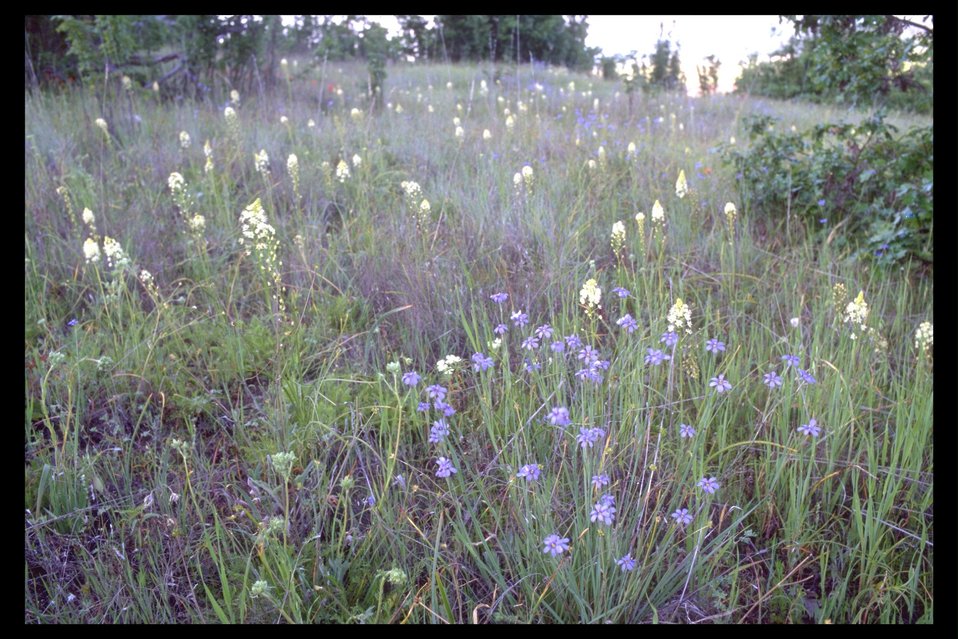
Blue-eyed Grass (Sisyrinchium bellum) and Death Camas (Zigadenus venenosus).